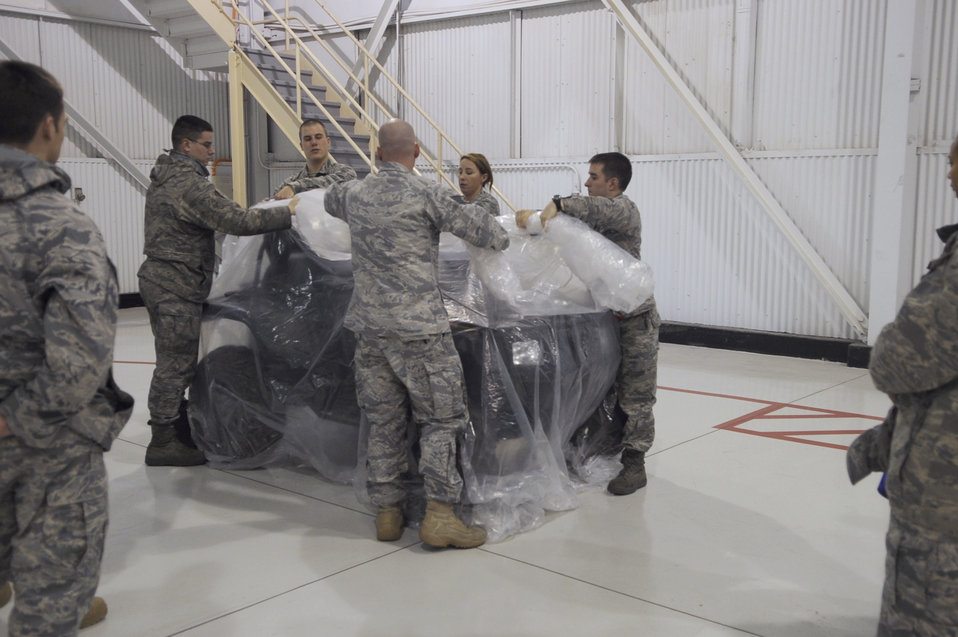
ATSO rodeo prepares Airmen for exercises, deployments

Airmen participate in simulated emergency situations Dec. 13, 2010, at Mountain Home Air Force Base, Idaho, during an ability to survive and operate rodeo.